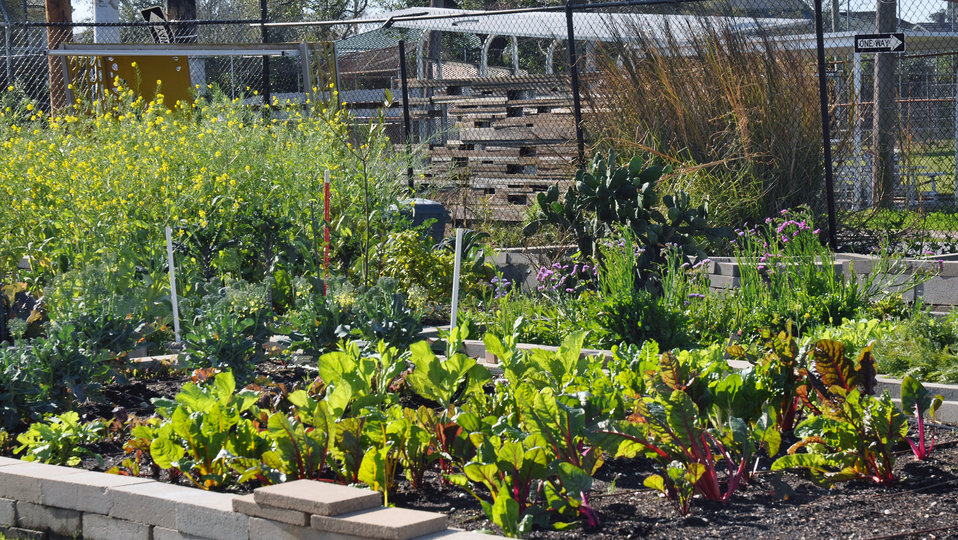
Vegetables growing in raised beds at Hollygrove Market and Farm (HGMF) in New Orleans, LA on Tuesday, Feb. 26, 2013.